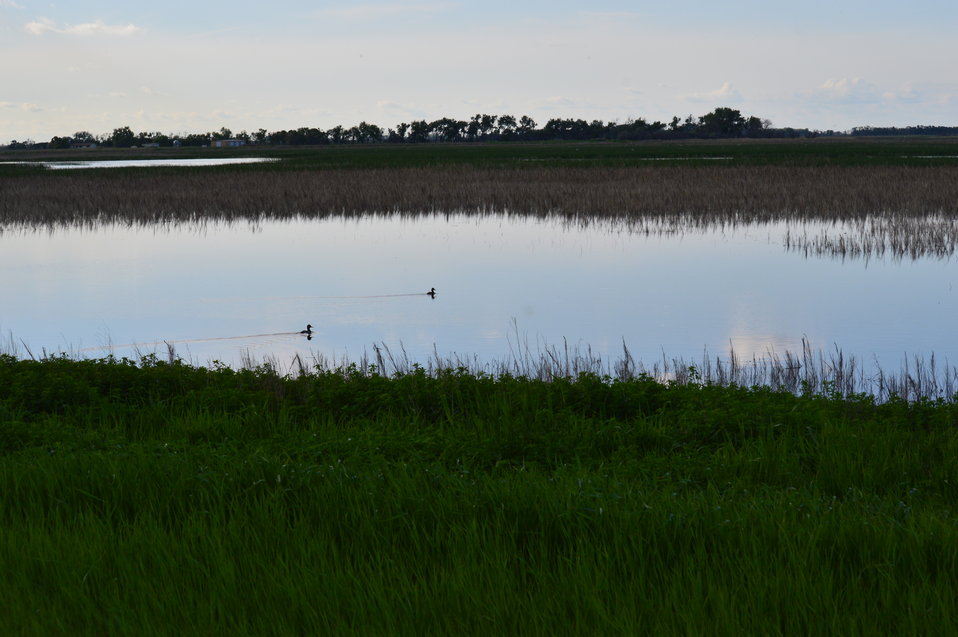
Reflections on Sand Lake

Scenery and wildlife at Sand Lake National Wildlife Refuge in South Dakota